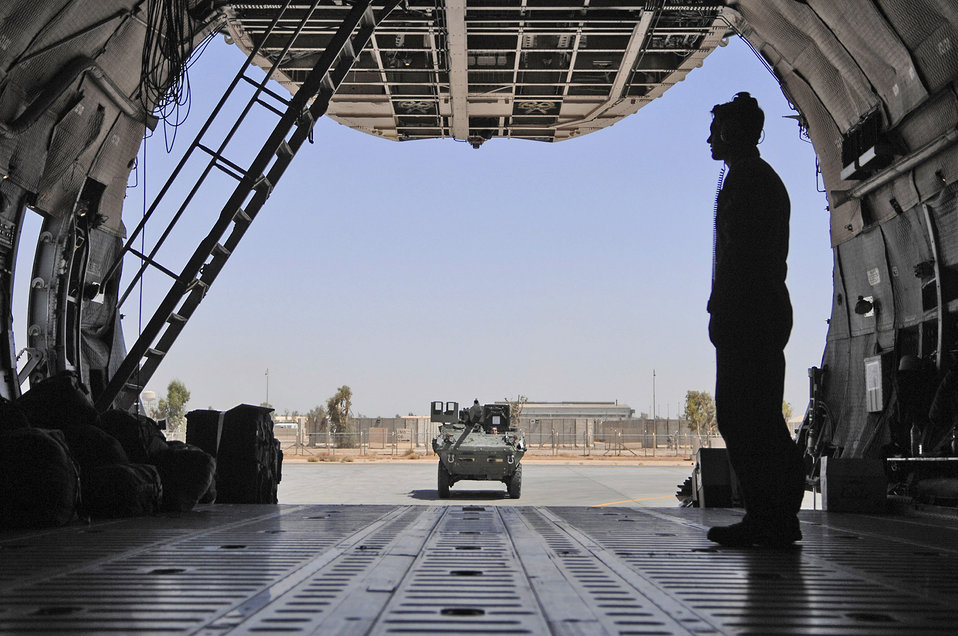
Open wide

Tech. Sgt. Kurt Nemecek waits to usher an Army Stryker Infantry Carrier Vehicle onto a C-5 Galaxy June 25 at Joint Base Balad, Iraq. Two Strykers were loaded and headed to the Anniston Army Depot in Ala. The C-5 is mainly used to transport oversized cargo, and has a maximum capacity of 270,000 pounds. Sergeant Nemecek is a 9th Airlift Squadron flight engineer assigned to Dover Air Force Base, Del.